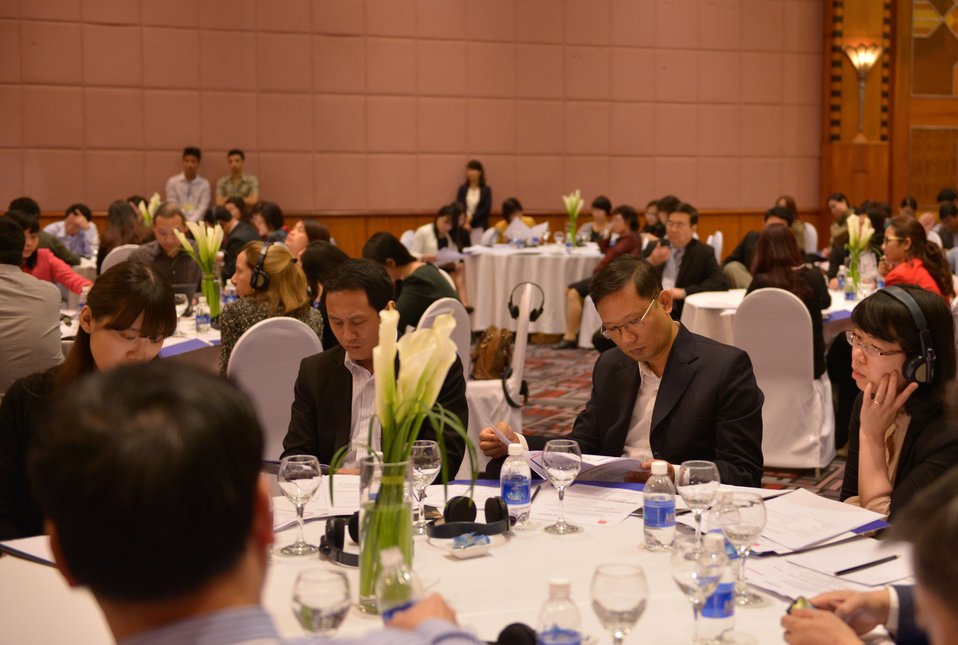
Strategic Kick-off of Governance for Inclusive Growth Program

Hanoi, April 8, 2014.